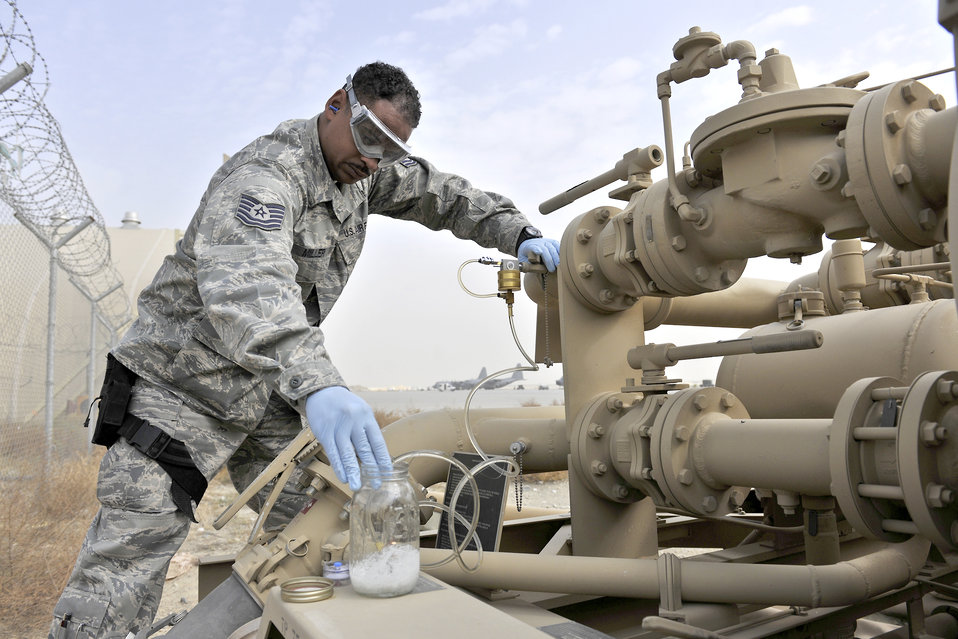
A necessary inspection

Tech Sgt. Kerry Miller performs a weekly inspection of a fuel filtering system at Bagram Airfield, Afghanistan, Oct. 14, 2010. The inspection makes sure that no debris or water has contaminated the fuel. He is the non-commissioned officer in charge of the laboratory and day shift distribution supervisor for the 455th Expeditionary Logistics Readiness Squadron.